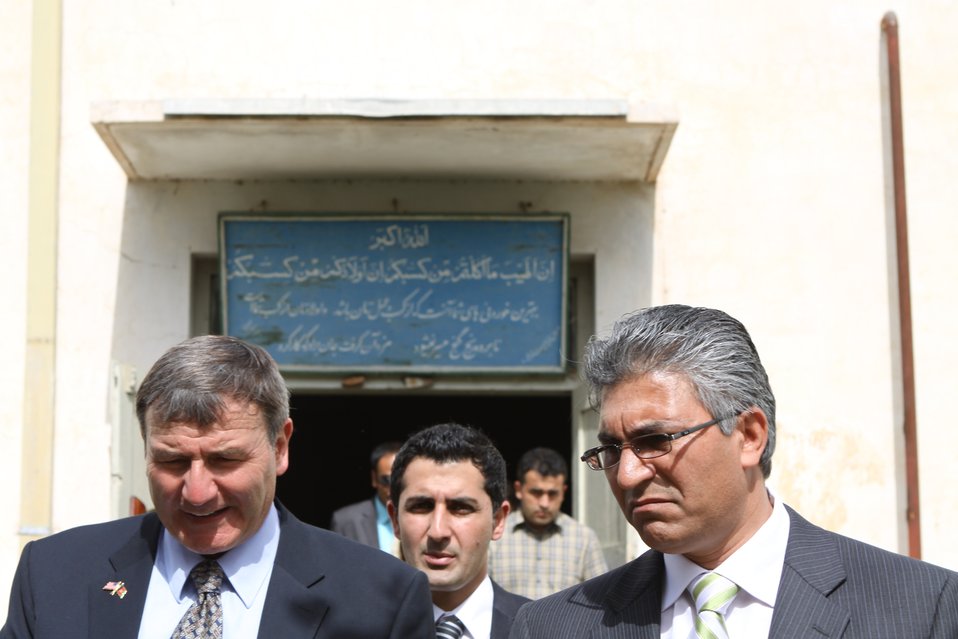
100525 Hirat Textile Company 780